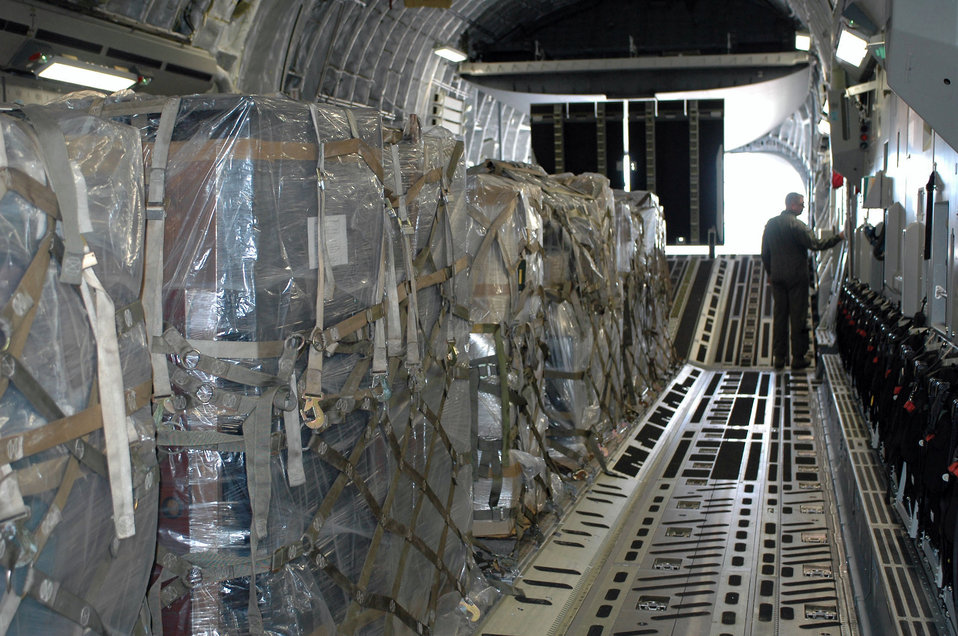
Dover aircrew delivers humanitarian supplies to Nicaragua

Master Sgt. Mike Wright prepares a C-17 Globemaster III to unload humanitarian cargo Jan. 18 at the Managua International Airport, Nicarauga. Approximately 18,000 pounds of cargo consisting of desks, chairs, file cabinets and books were delivered for use at a Nicaraugan university library. Sergeant Wright is a loadmaster with the Air Force Reserve's 326th Airlift Squadron from Dover Air Force Base, Del.